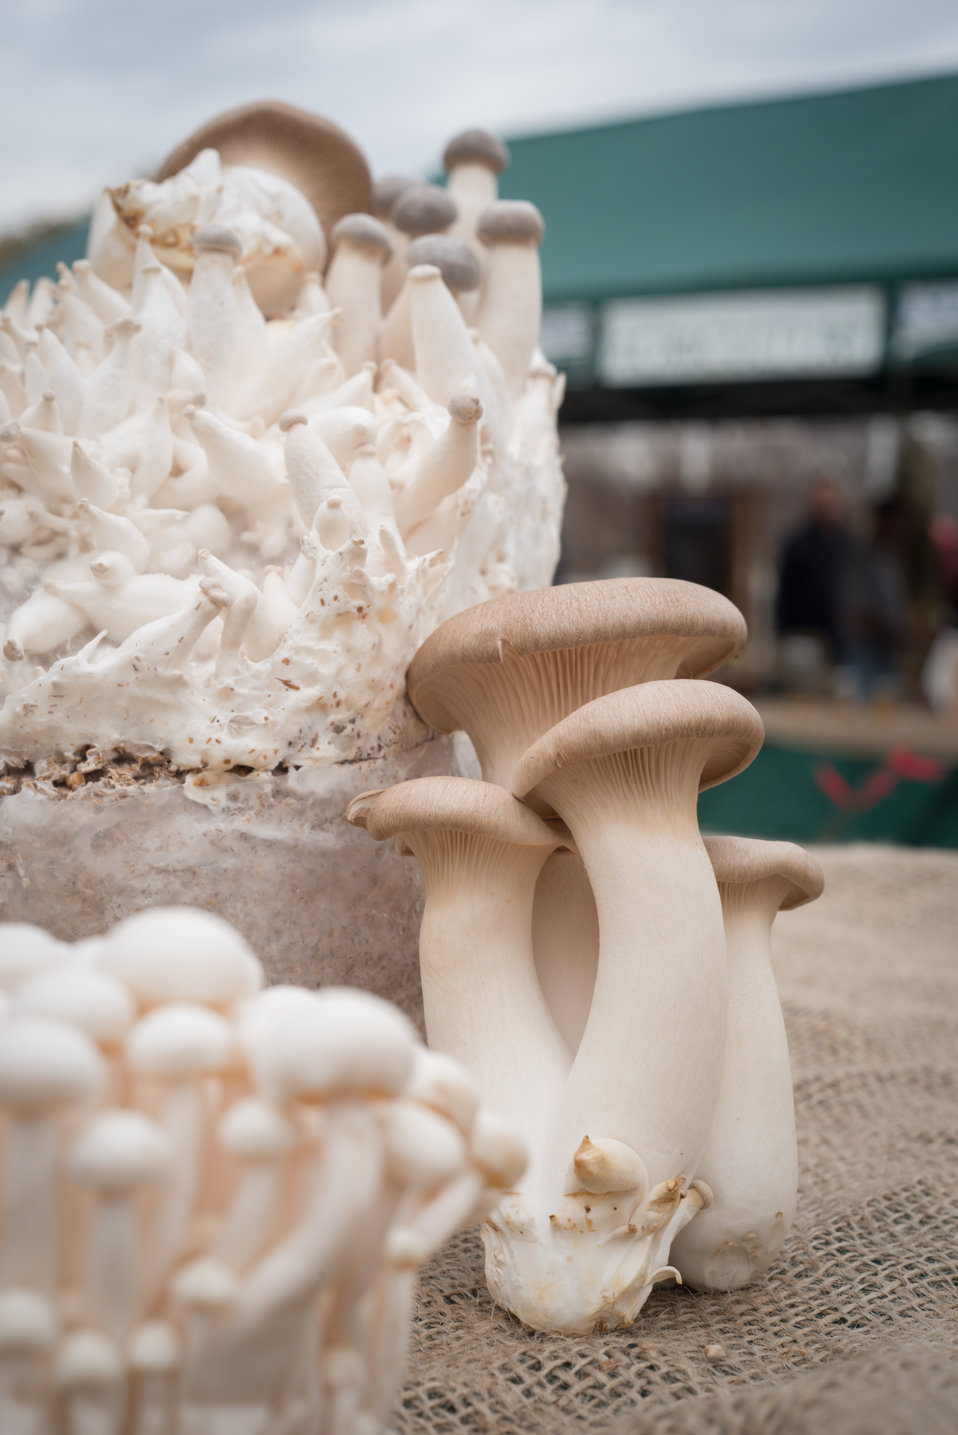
(Front - rear) Beach (small cap), royal trumpet (large stem) mushrooms on display at the U.S. Department of Agriculture (USDA) farmers markets and Harvest Festival at the USDA Whitten Building east parking lot in Washington, DC, on Friday, November 22, 2013.